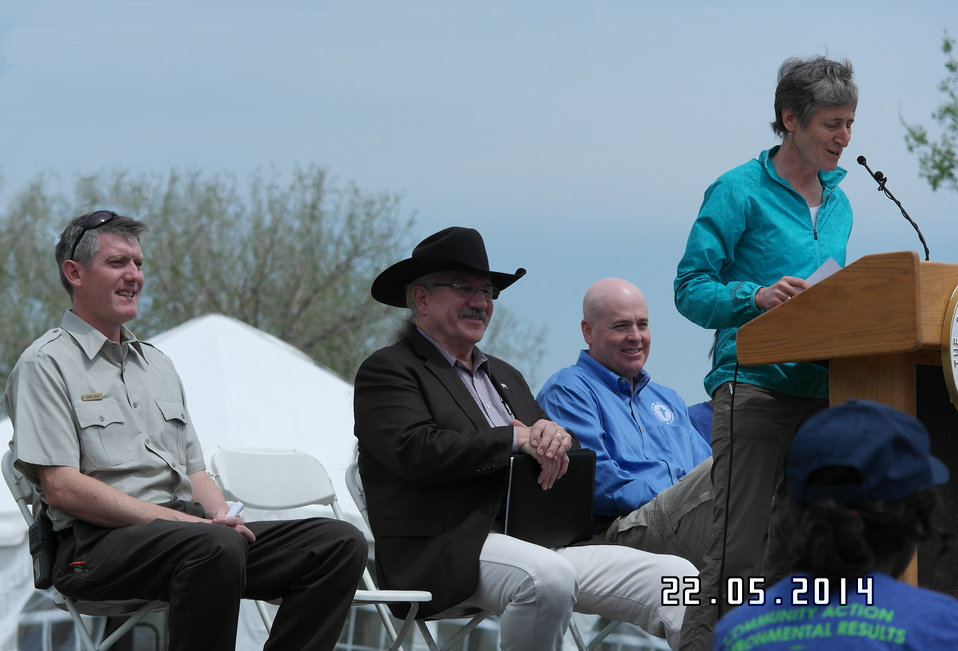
Secretary Jewell Announces $6.7 for Youth Conservation Jobs

Jewell made the announcement at an event at Rocky Mountain Arsenal National Wildlife Refuge outside Denver, Colorado, where she was joined by U.S. Department of Agriculture (USDA) Deputy Under Secretary for Natural Resources and the Environment Arthur “Butch” Blazer; Greg Knadle, Vice President for Government Relations of the National Fish and Wildlife Foundation (NFWF); Refuge Manager David Lucas and youth corps members of Groundwork Denver.